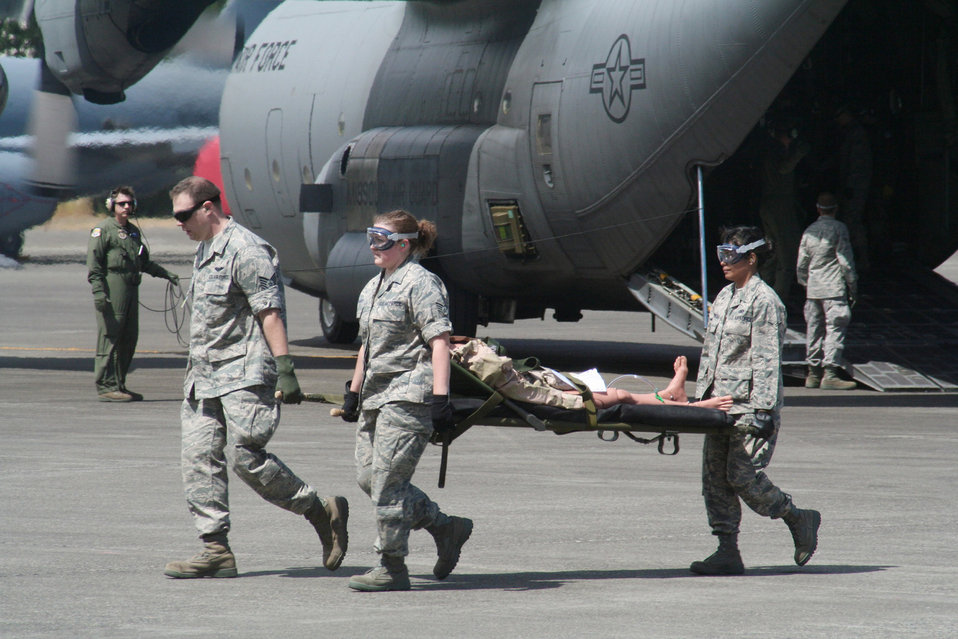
Guard members bring unique skills to war effort

Teams compete in the aeromedical evacuation events for Air Mobility Rodeo 2009 July 20 at McChord Air Force Base, Wash. More than 100 teams are participating in Rodeo competition, including teams from seven foreign countries. Rodeo is the Air Force's and Air Mobility Command's premier air mobility competition. It's an international combat skills and flying operations competition designed to develop and improve techniques, procedures and interoperability with international partners to optimize mobility partnerships and enhance mobility operations.